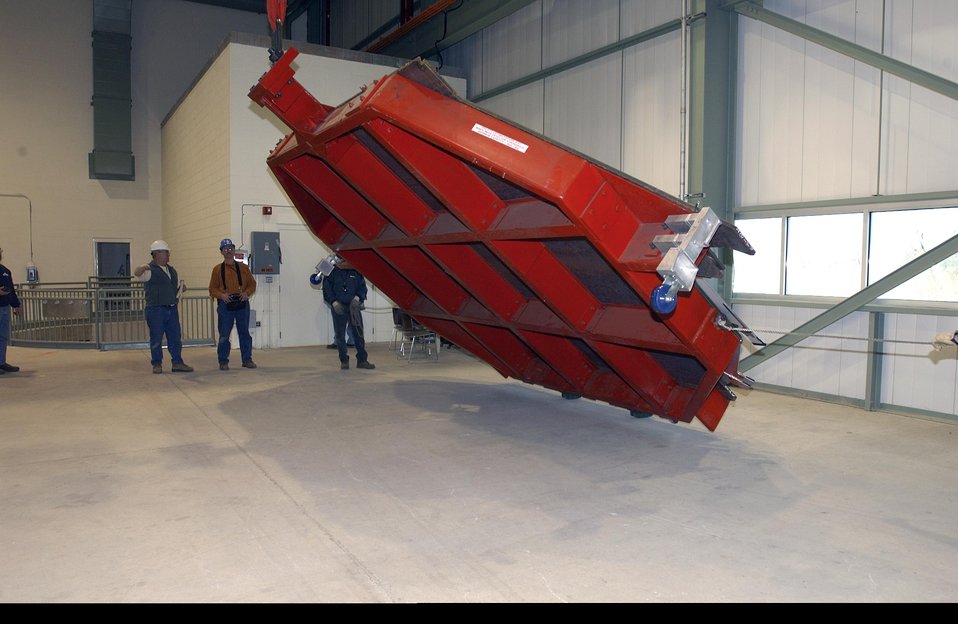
THE FIRST MINOS DETECTOR PLANE BEING INSTALLED AT THE MINOS BUILDING.

TO CARRY OUT THE MINOS EXPERIMENT SCIENTISTS USE THE MAIN INJECTOR ACCELERATOR AT THE FERMI NATIONAL ACCELERATOR LABORATORY IN BATAVIA, ILLINOIS TO SEND A BEAM OF MUON NEUTRINOS THROUGH THE EARTH TO A CAVERN HALF A MILE UNDERGROUND IN A FORMER IRON MINE IN NORTHEASTERN MINNESOTA. PHYSICISTS WILL USE THE MINOS DETECTOR TO EXPLORE THE PHENOMENON OF NEUTRON MASS, A MILESTONE IN THE FIELD OF NEUTRINO PHYSICS.